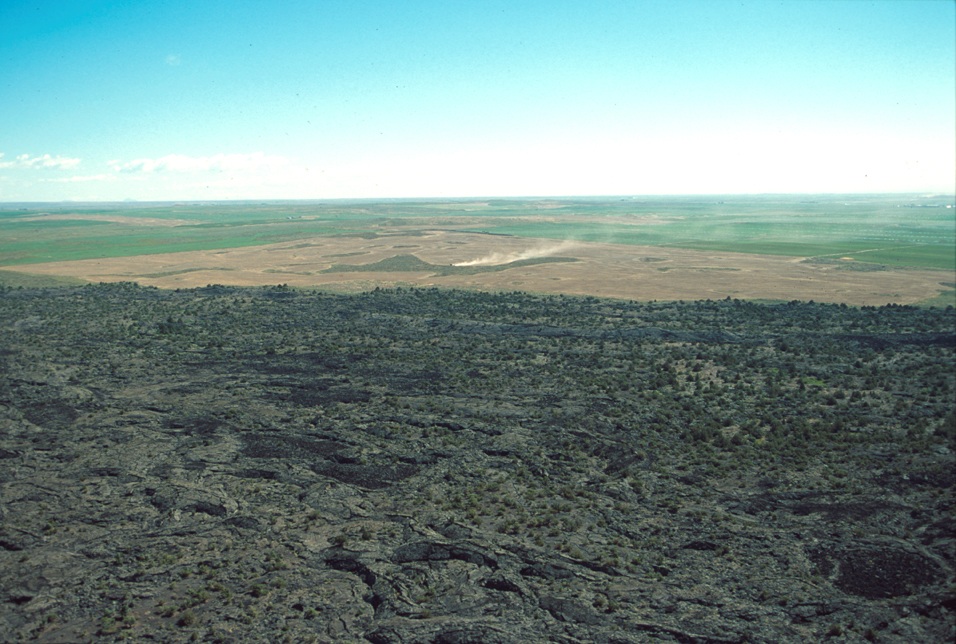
Shoshone Field Office USRD Upper Snake River District